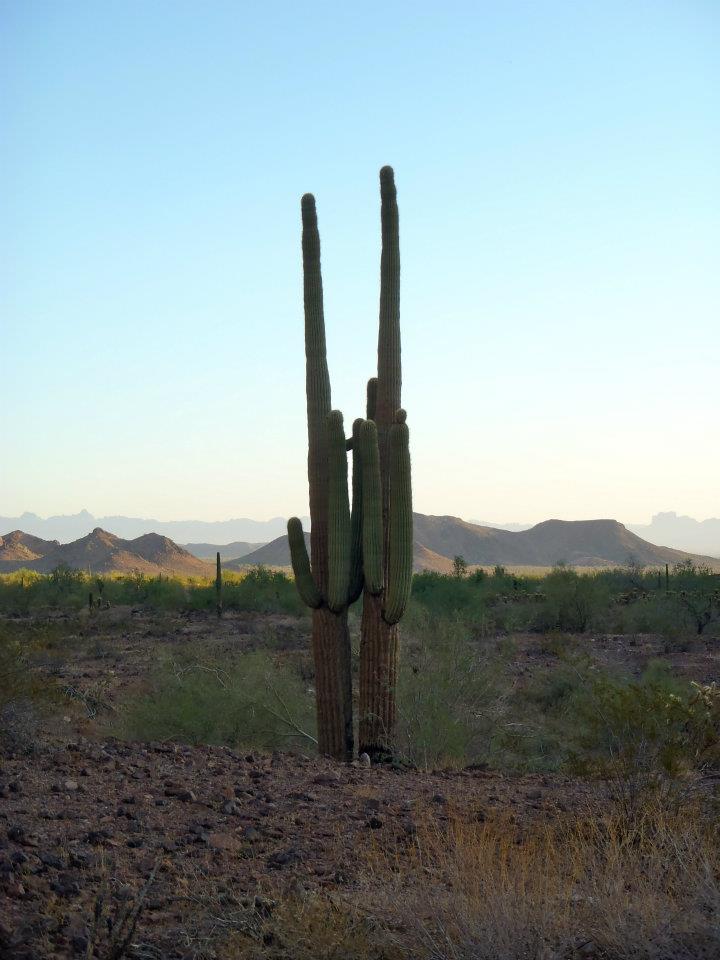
twin saguaro cacti, AZ National Wildlife Refuge Complex

Photo: Molly McCarter, USFWS
2011 Wilderness Fellow